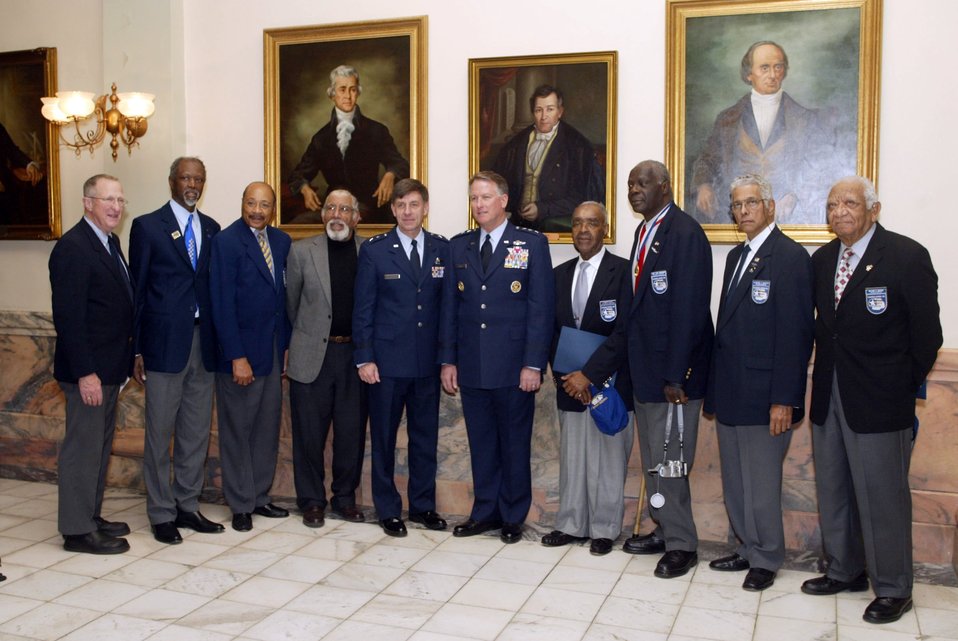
Atlanta kicks off 'Heritage to Horizons' celebration

Maj. Gen. Scott A. Hammond (fifth from left) and Lt. Gen. John A. Bradley (sixth from left) are joined by members and World War II veterans of the Atlanta Chapter Tuskegee Airmen to kickoff the